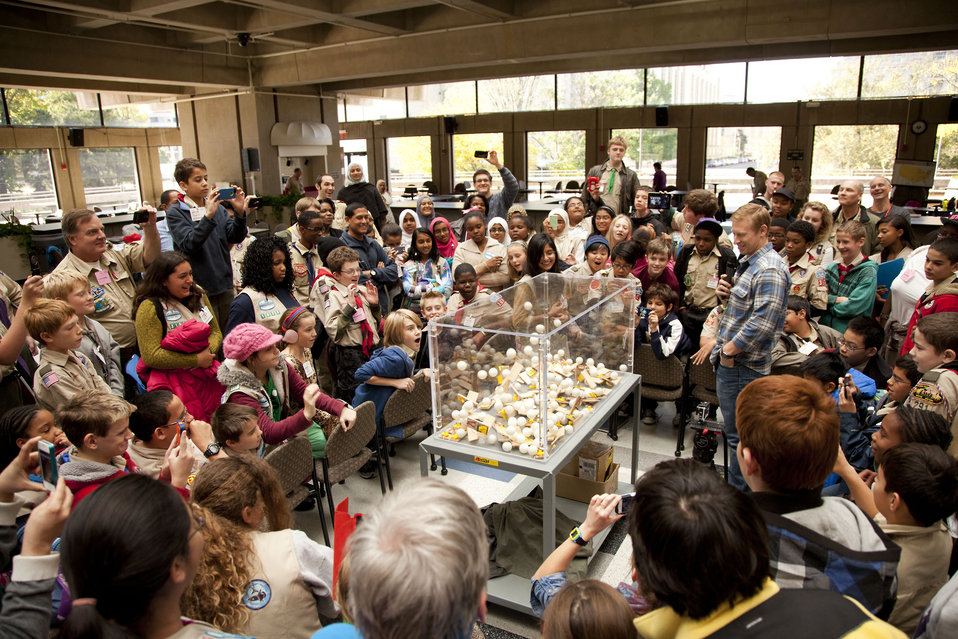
Scouts watch ping pong balls fire off of mousetraps as part of a demonstration on visualizing nuclear reactions.